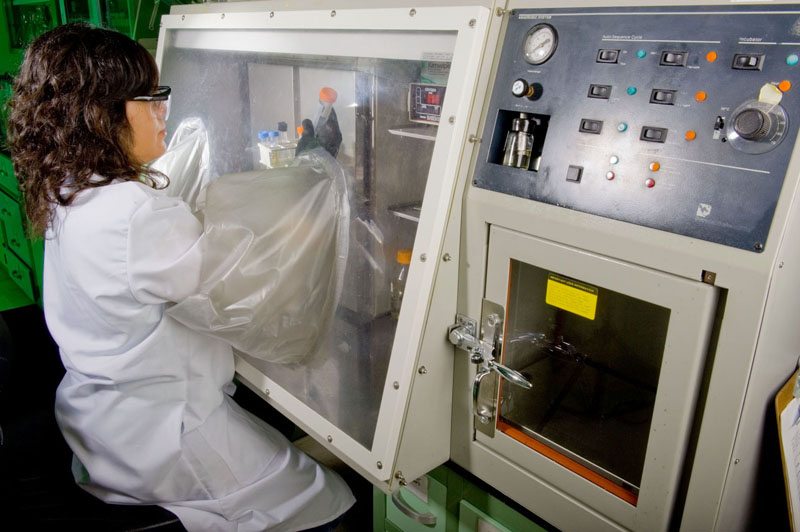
Student contractor Renata Marti examines samples in containment glove box. Cincinnati, 2008 USEPA Photo by Eric Vance